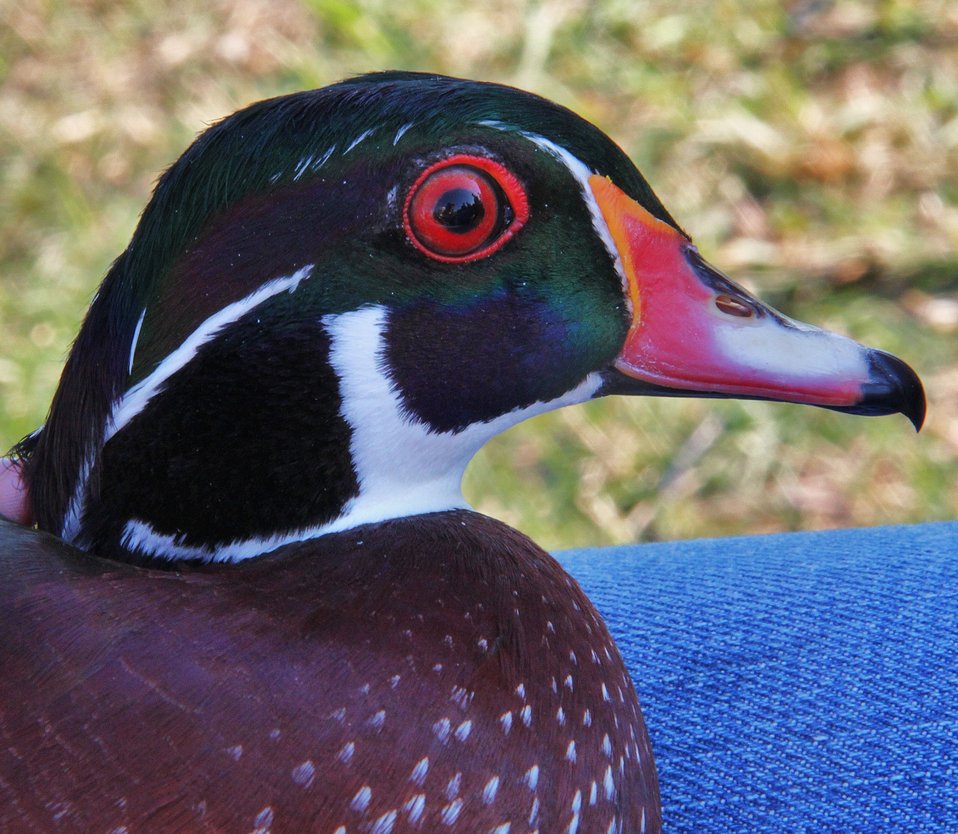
Male wood duck at Missisquoi National Wildlife Refuge

credit: ken sturm/usfws